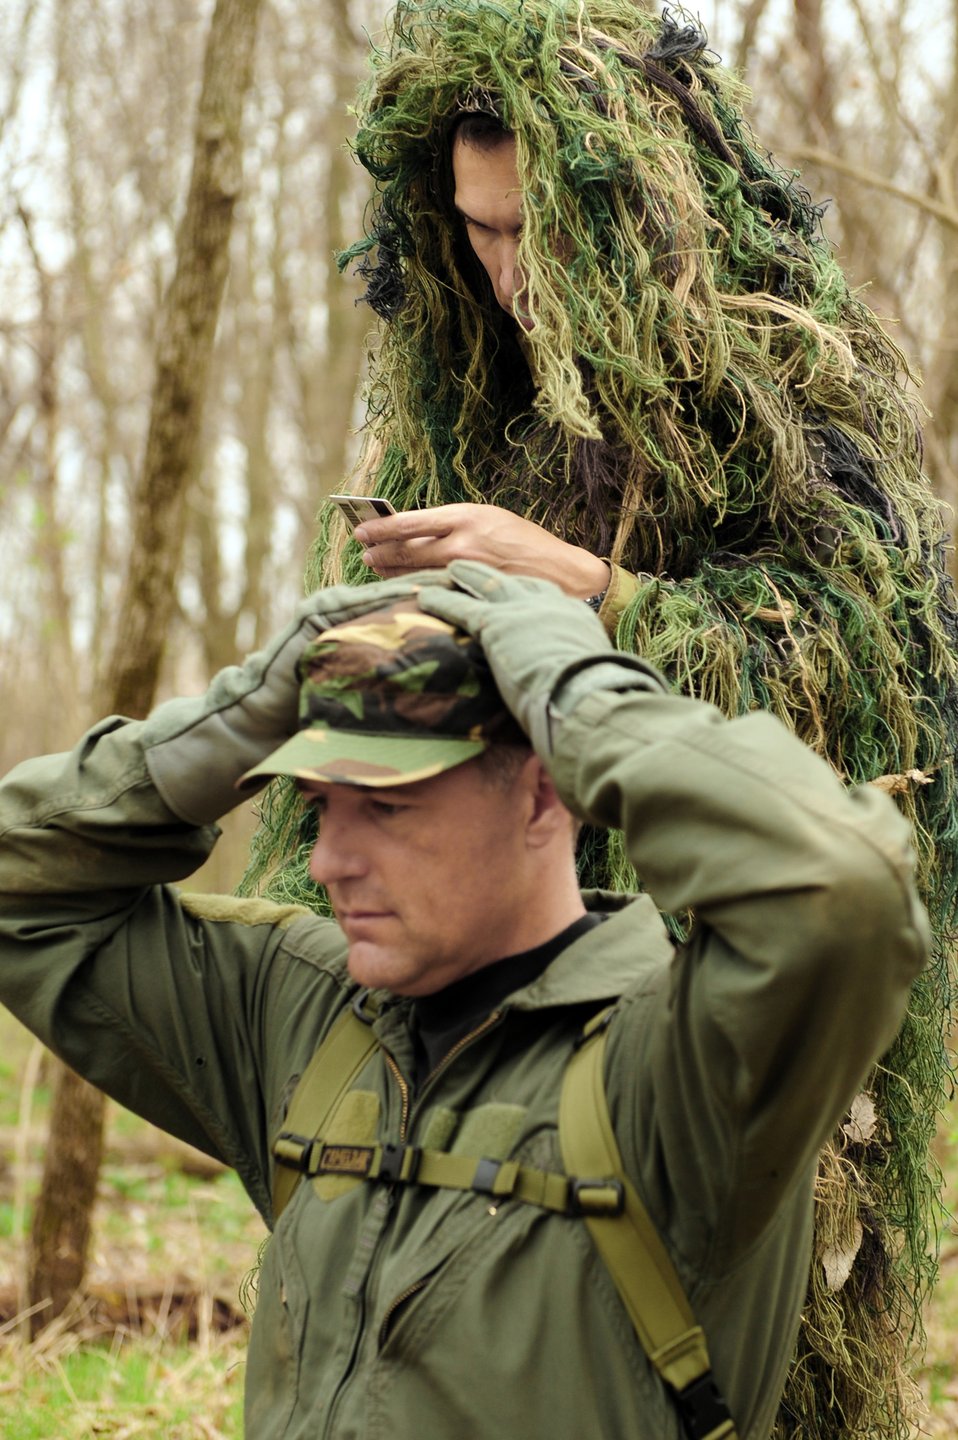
Combat survival training

Tech. Sgt. Robert Graham verifies the identity of a